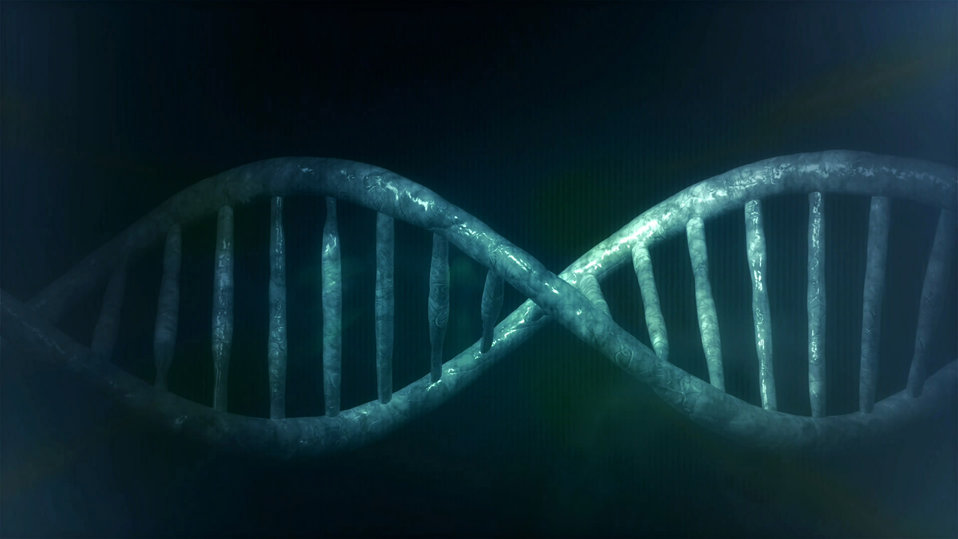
Human dna

Background with the approach to human dna.